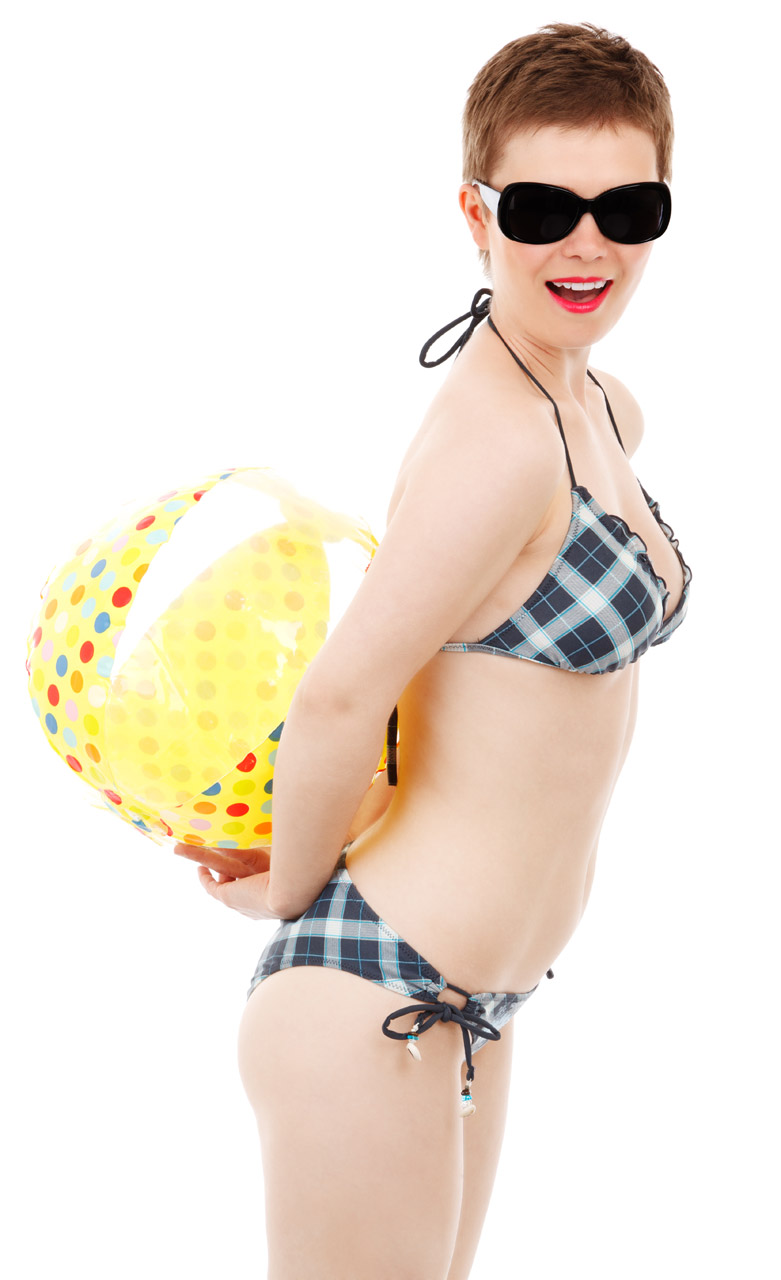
Bikini girl with a beach ball

Young woman in bikini with a beach ball behing her back and dark sunglasses isolated on white background.